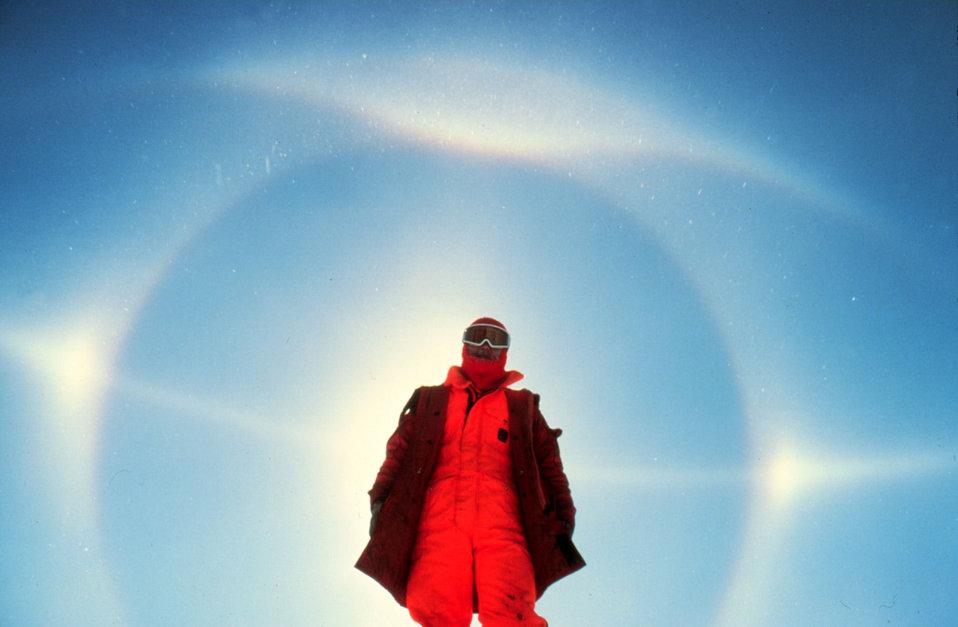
A magnificent halo